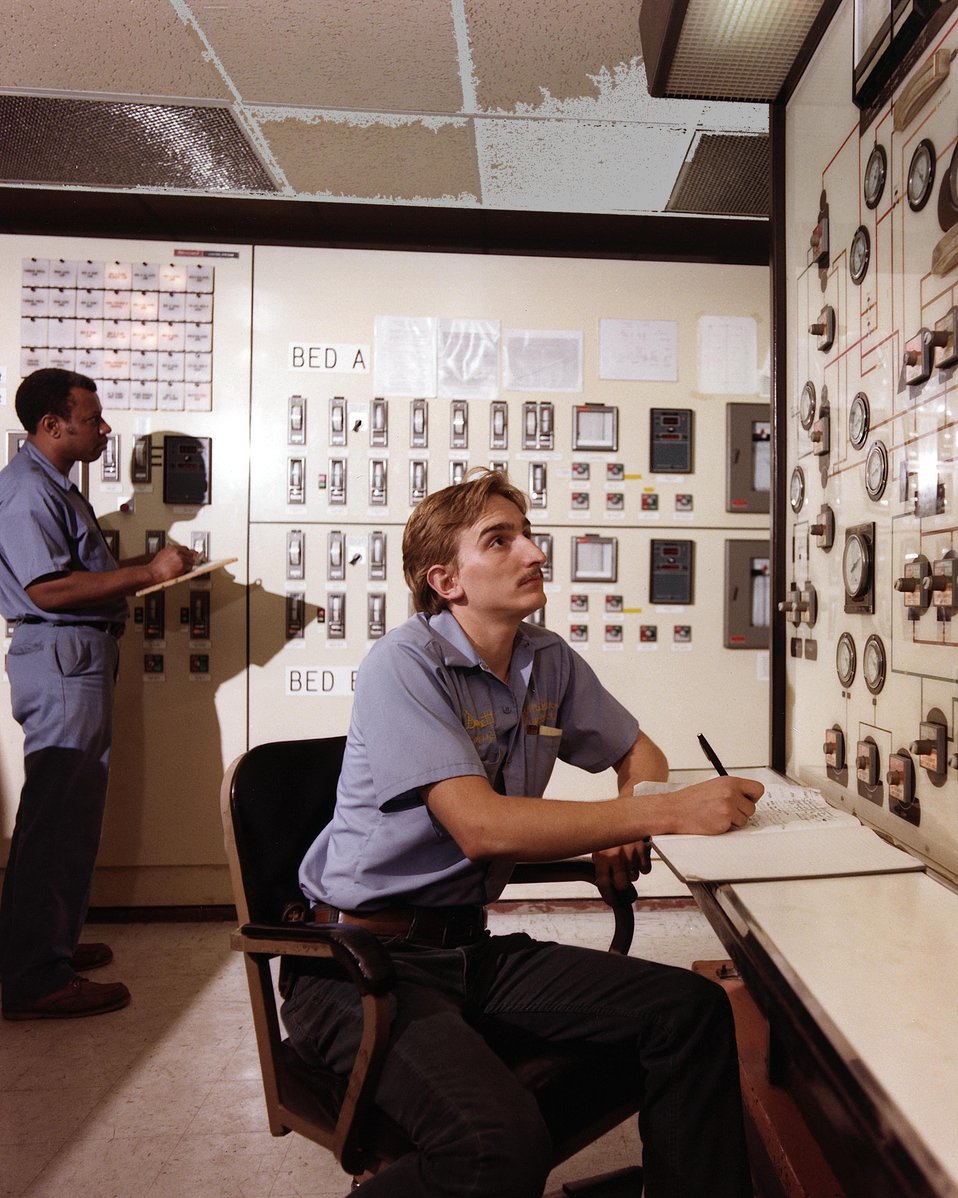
THE CONTROL PANEL OF THE FLUIDIZED-BED STEAM GENERATOR.

THE PLANT IS CAPABLE OF BURNING HIGH SULFUR COAL WHILE MAINTAINING STACK EMISSIONS WITHIN EPA AND WASHINGTON, D C ESTABLISHED POLLUTION LIMITS. IN ADDITION, THE NEW SYSTEM GENERATES RELATIVELY LOW QUANTITIES OF NITROGEN OXIDES WHICH ARE NOW CONSIDERED TO BE SIGNIFICANT POLLUTANTS RESULTING FROM COMBUSTION.